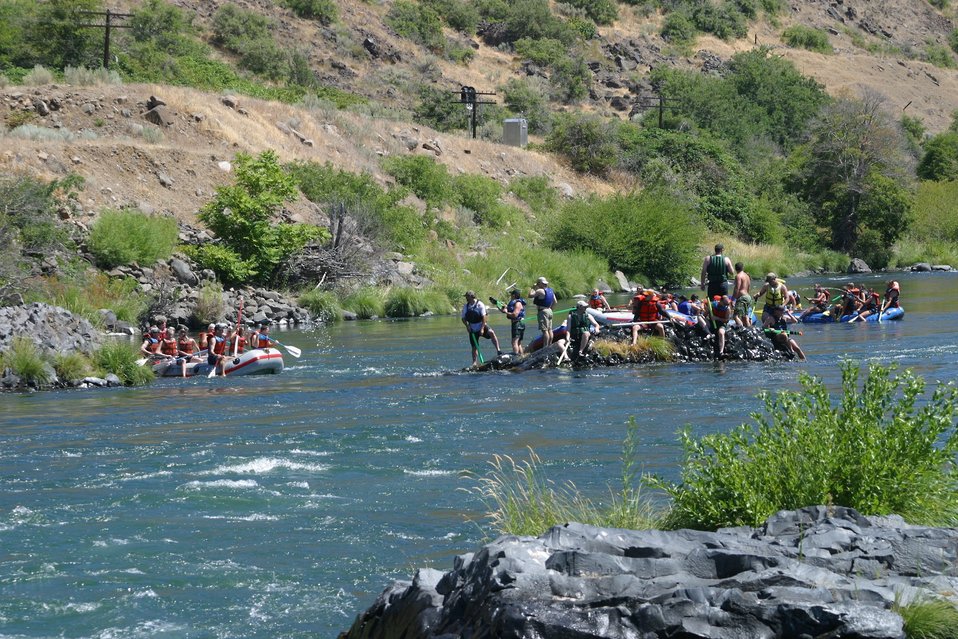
Wapinitia Rapids class III, has large roller coaster waves. 7/26/03 Pelton Dam 3600 cfs: Moody Rapids 4300 cfs.